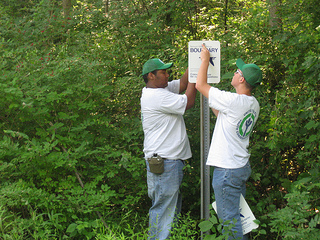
YCC putting up boundary sign

U.S. Fish and Wildlife Service